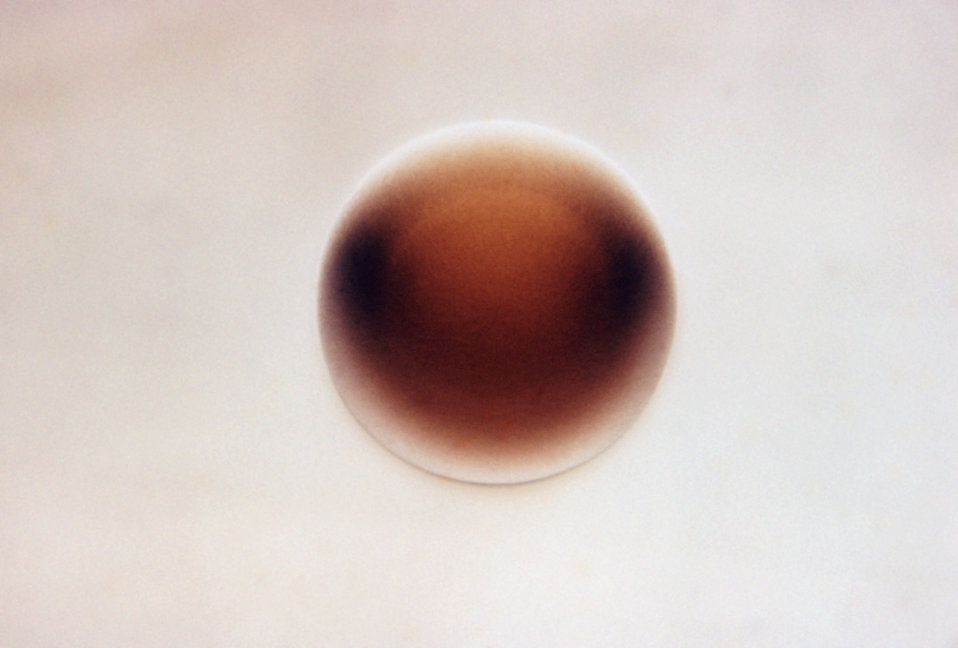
This is an enlarged view of a T3, laboratory-grown Neisseria gonorrhoeae bacterial colony.